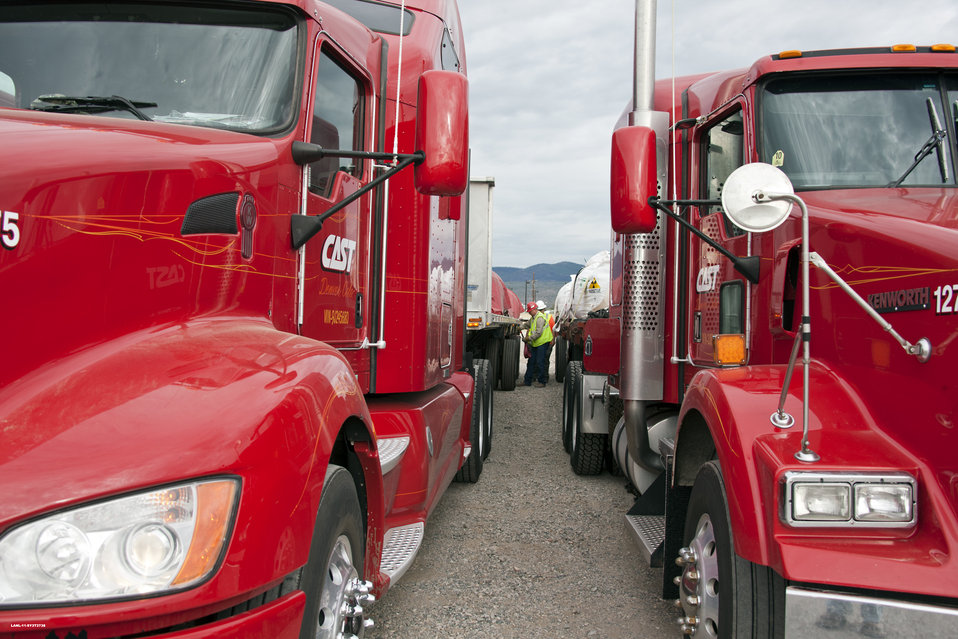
Los Alamos waste management

Waste generated by building demolition and the installation of groundwater monitoring wells has been hauled to licensed disposal facilities.